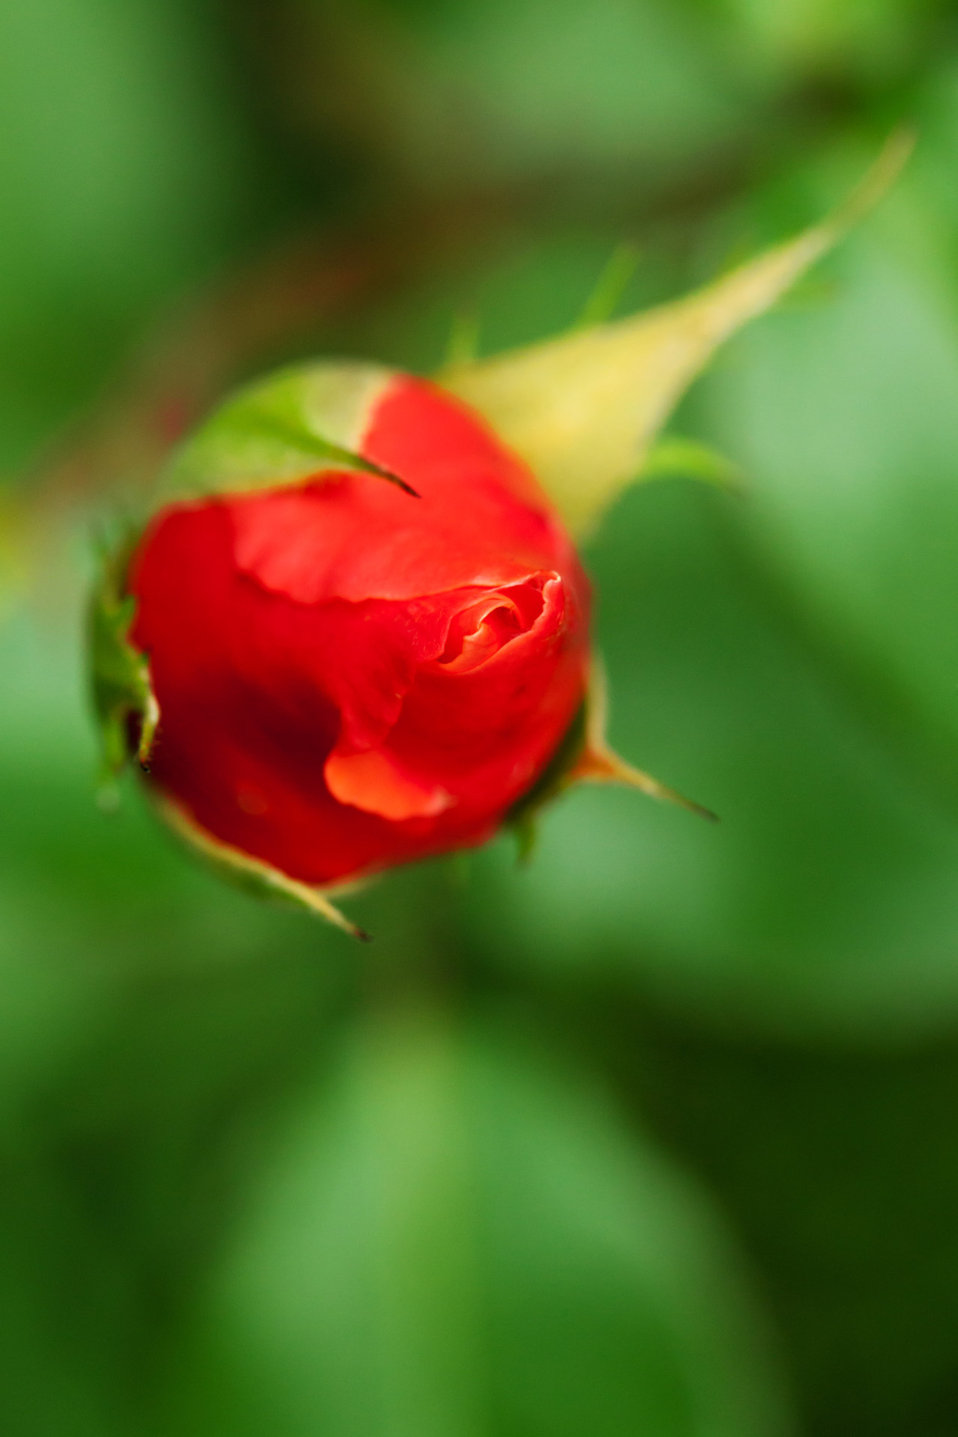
Red rosebud

Macro photo of a red rosebud.